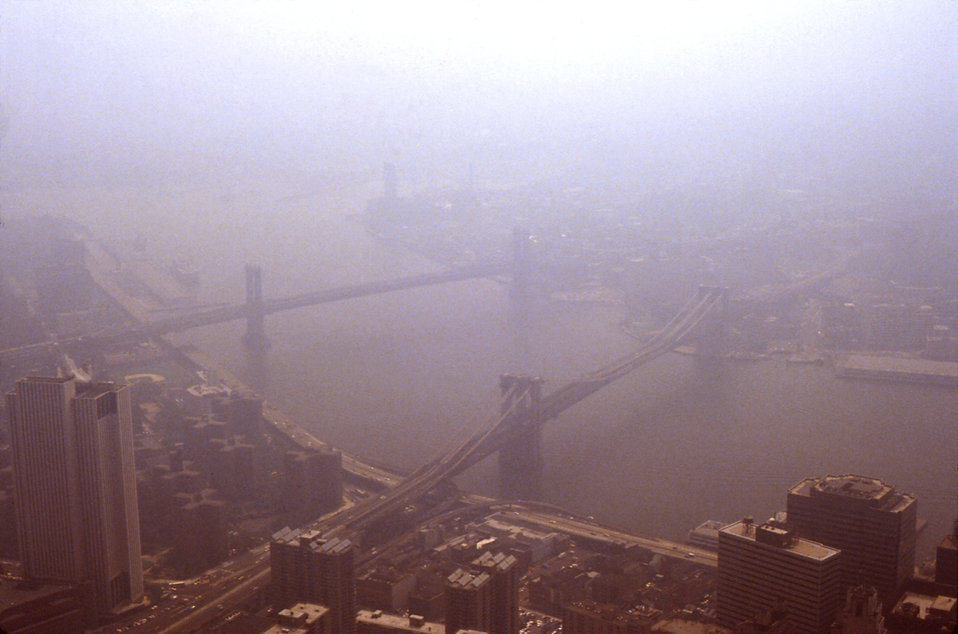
Two New York City bridges, the Brooklyn (foreground), and the Manhattan, can be seen in this view looking east from the 110th floor of the World Trade Center Tower 2, also known as the South Tower, in the borough of Manhattan. The spans connect Manhattan Island on the left with the borough of Brooklyn across the East River. Note the atmospheric smog preventing a clear view of these structures.